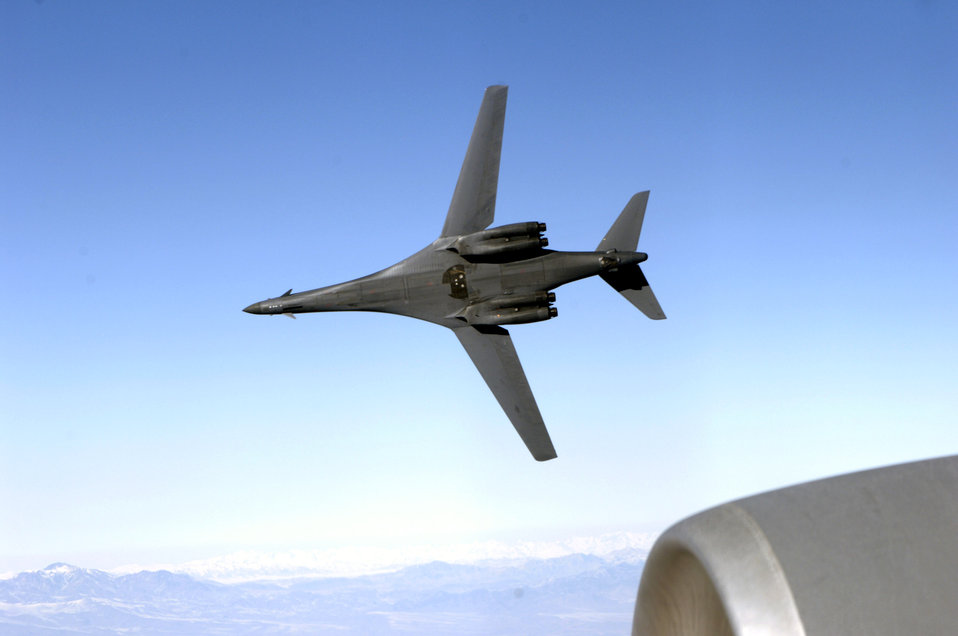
Fill'er up please!

A B-1B Lancer from the 9th Expeditionary Bomb Squadron pulls away from a KC-135 Stratotanker from the 22nd Expeditionary Air Refueling Squadron at Manas Air Base, Kyrgyzstan, and deployed from the 92nd Air Refueling Wing, Fairchild Air Force Base, Wash., over Afghanistan. The 22nd EARS refuels aircraft in and around Afghanistan.